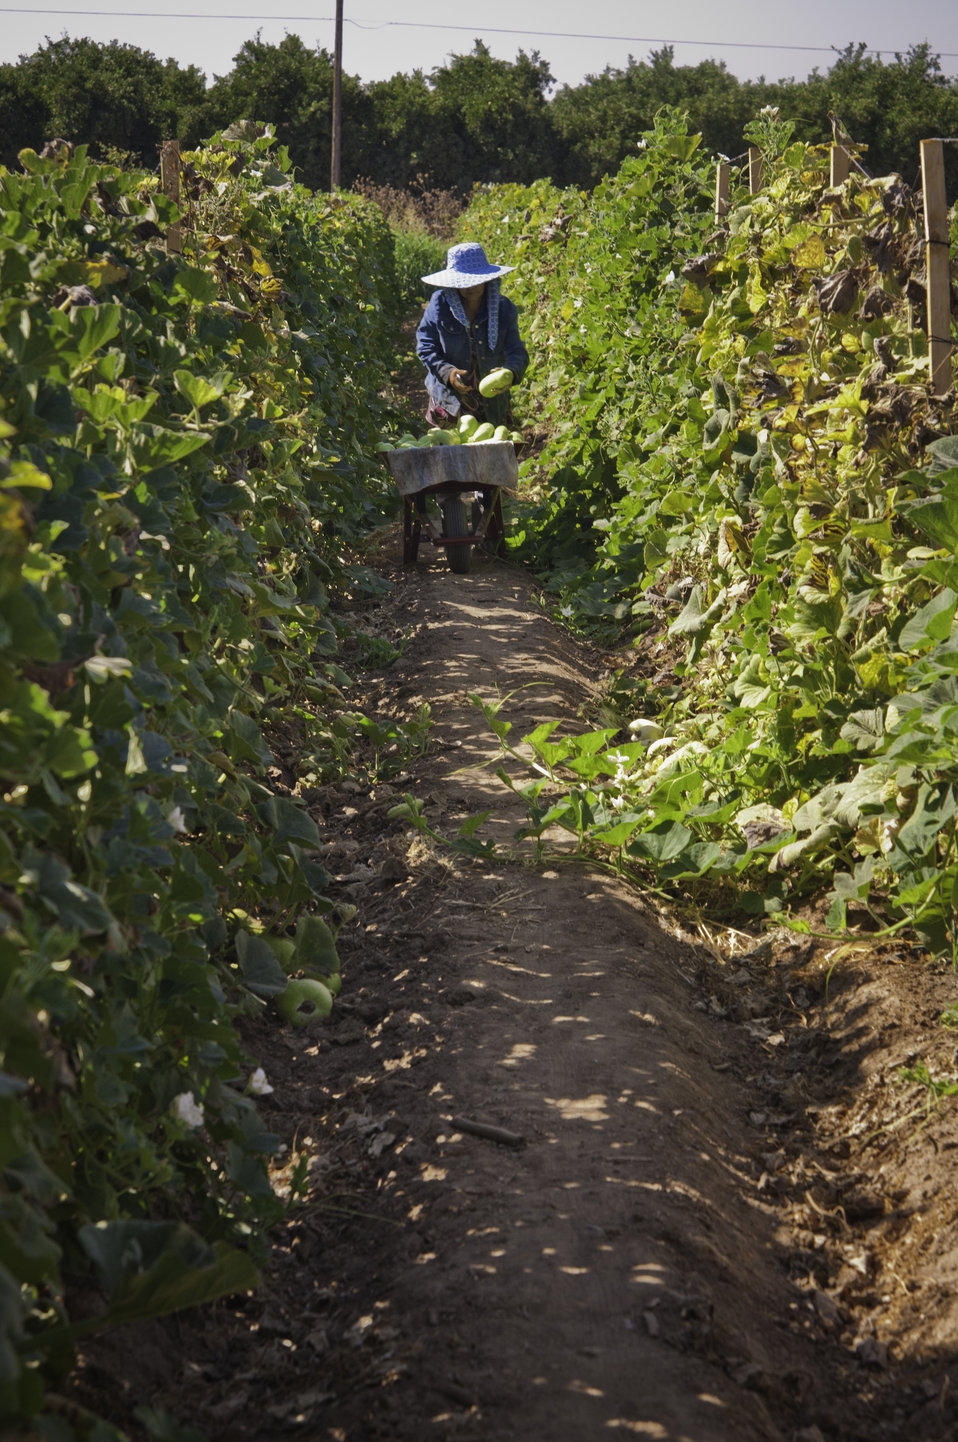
May Young Vu a Hmong farmer taking opo squash harvested in the morning on her farm May's Flower's in Sanger, California to be packed for the farmers market in the afternoon on Thursday, August 29, 2013.